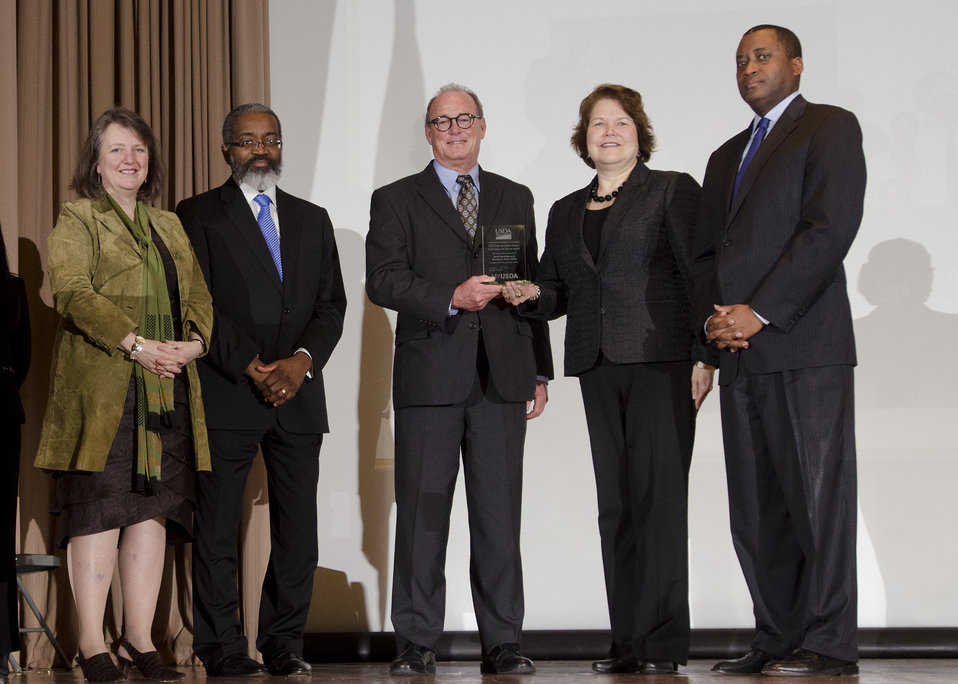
U.S. Department of Agriculture (USDA) Rural Development (RD) Tennessee State Office Director from Nashville, TN Bobby Goode receives the Dr. Martin Luther King, Jr. National Service Day Drum Major Service Award at the Jefferson Auditorium in Washington, D.C. on Tuesday, Jan. 15, 2013. (L to R, Agriculture Deputy Secretary Kathleen Merrigan, USDA Acting Assistant Secretary for Administration Dr. Gregory Parham, Bobby Goode, Agriculture Rural Development (RD) Business and Cooperative Service Administrator Judith A. Canales, and Agriculture Assistant Secretary for Civil Rights Dr. Joe Leonard).